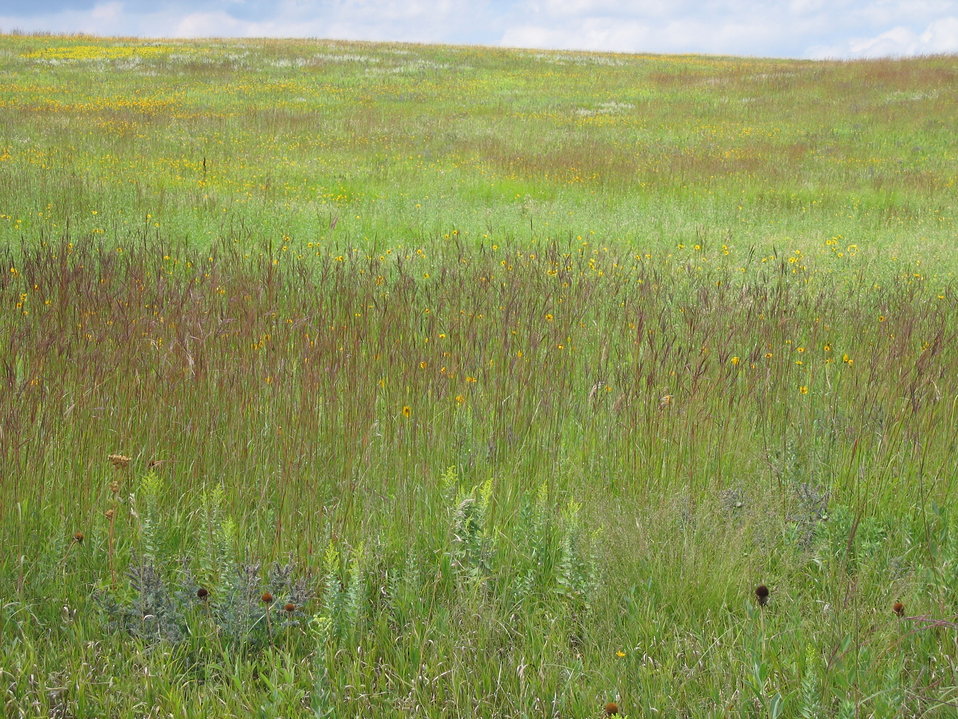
Grass is not always green...

The purple spikes of big bluestem tower above Maximillian sunflowers and other grasses at Roe Waterfowl Production Area in Codington Co., SD.